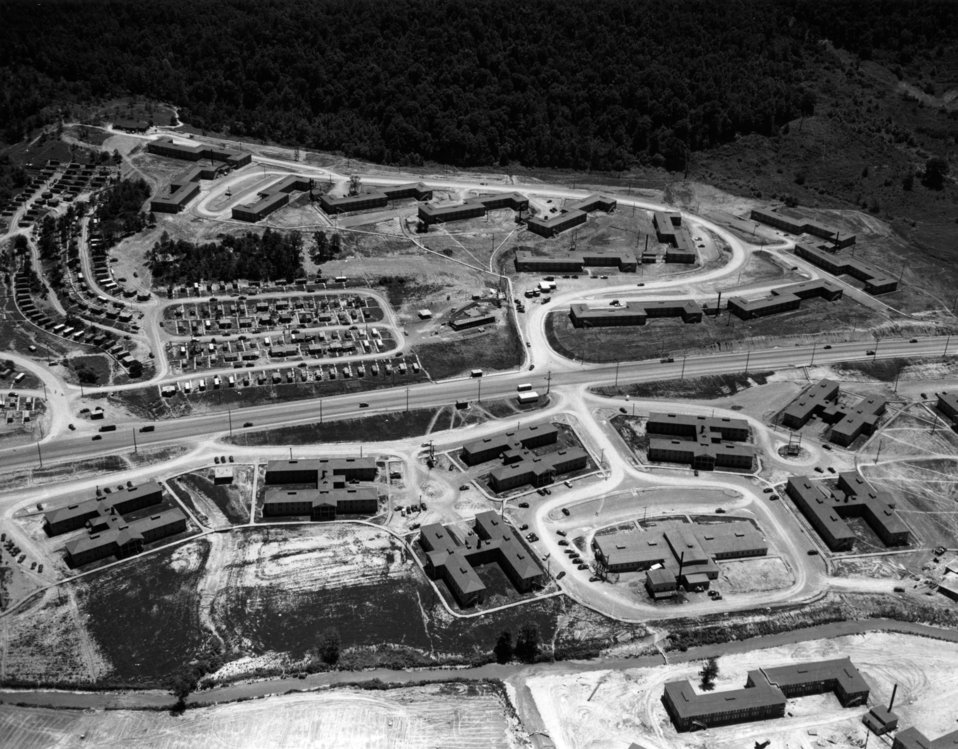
Aerial of Oak Ridge